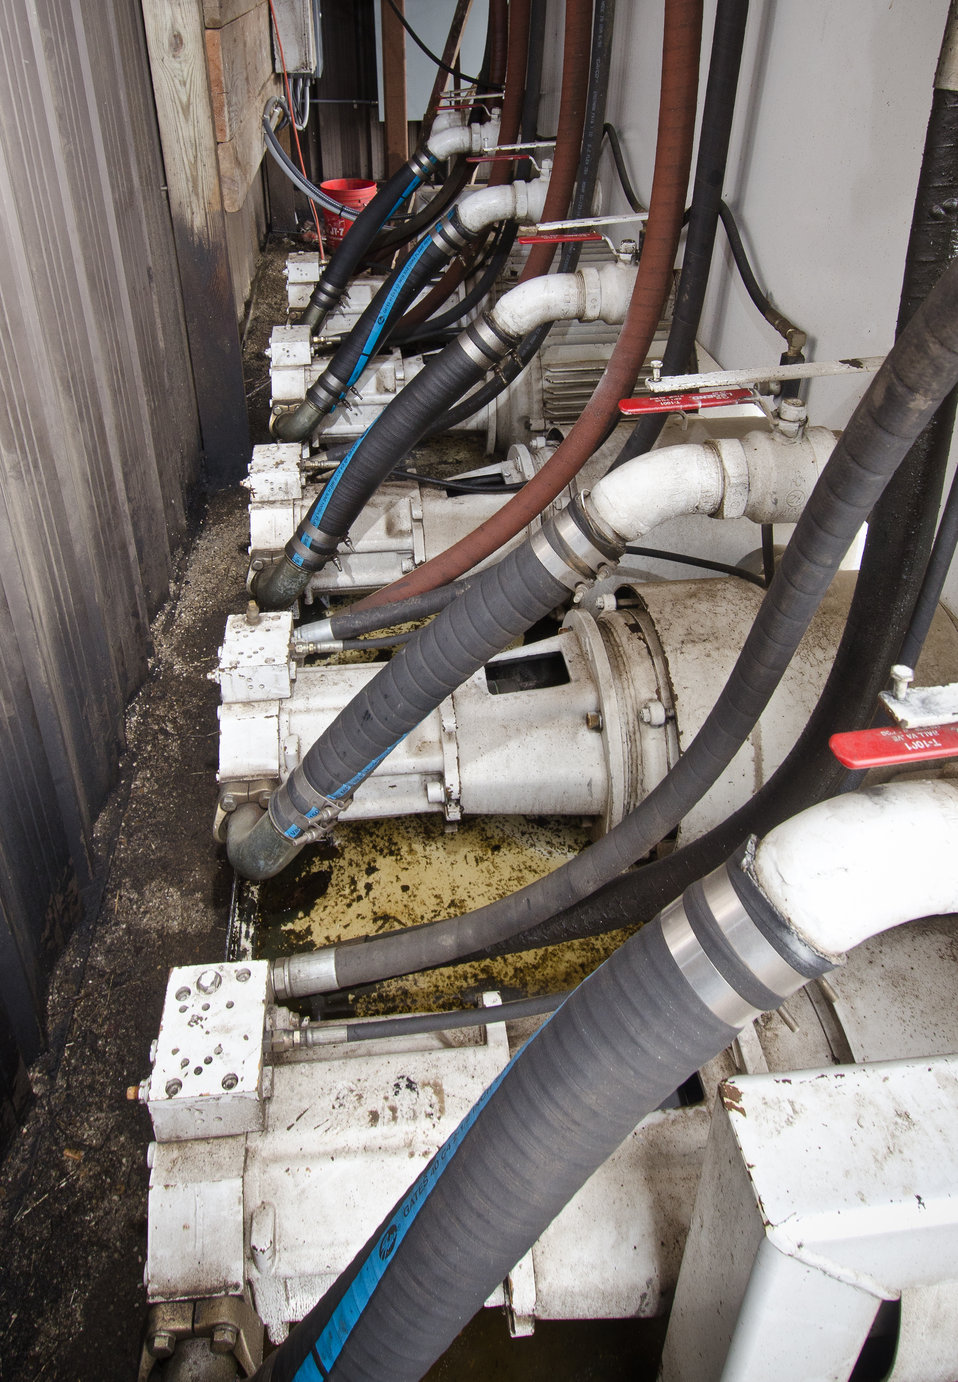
Electric motors replaced diesel engines at Heidel Hollow, on Wednesday, April 20, 2011. A family owned farm since 1852 is a 1,800 acre operation in Germansville, PA. Led by David Fink, President of Heidel Hollow Farms, they mainly produce and compact hay for export and grow produce on 300 acres for local sale. With the financial help of the U.S. Department of Agriculture (USDA) an 896 panel solar array was recently installed on non farmable diversion ditches. Rated at 200 kilowatts, they project 240 megawatts of electricity to be produced each year, providing up to 70% of the farms electrical needs. Additionally, USDA financial assistance made it possible to replace the hay compactor’s diesel engines with clean low-maintenance, low operating cost electric motors to power the compactor's hydraulic system. The compactor increases the density of baled hay by two and half times for more efficient shipping to overseas customers.